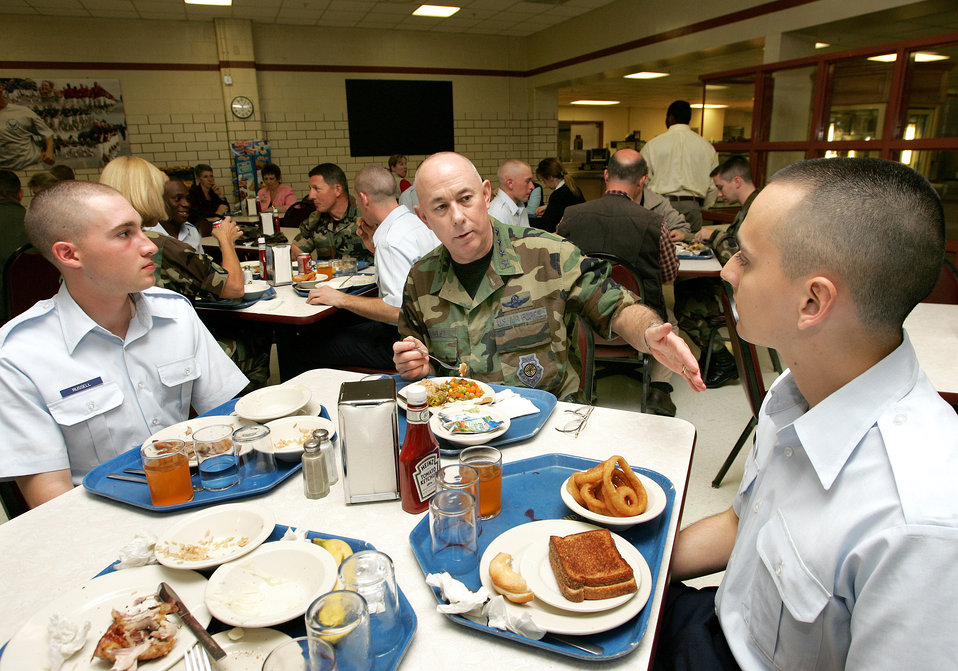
Chief of staff visits Lackland

Gen. T. Michael Moseley, Air Force chief of staff, has lunch with Airman Basic Adrian Russell (left) and Airman Basic Ryan Holt on Thursday, April 27, 2006, at Lackland Air Force Base, Texas. The Airmen graduated from basic training April 28, and were both with the 321st Training Squadron.